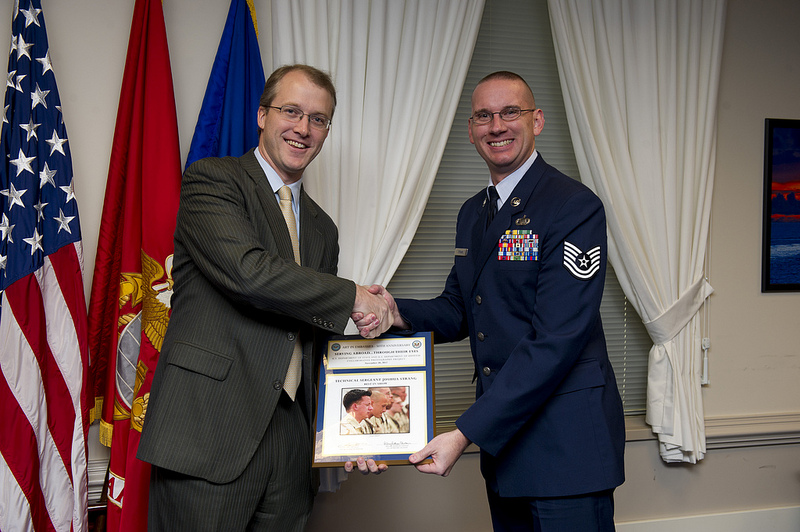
Winning shot and smiles

Pentagon Press Secretary George E. Little, left, smiles as he hands over the